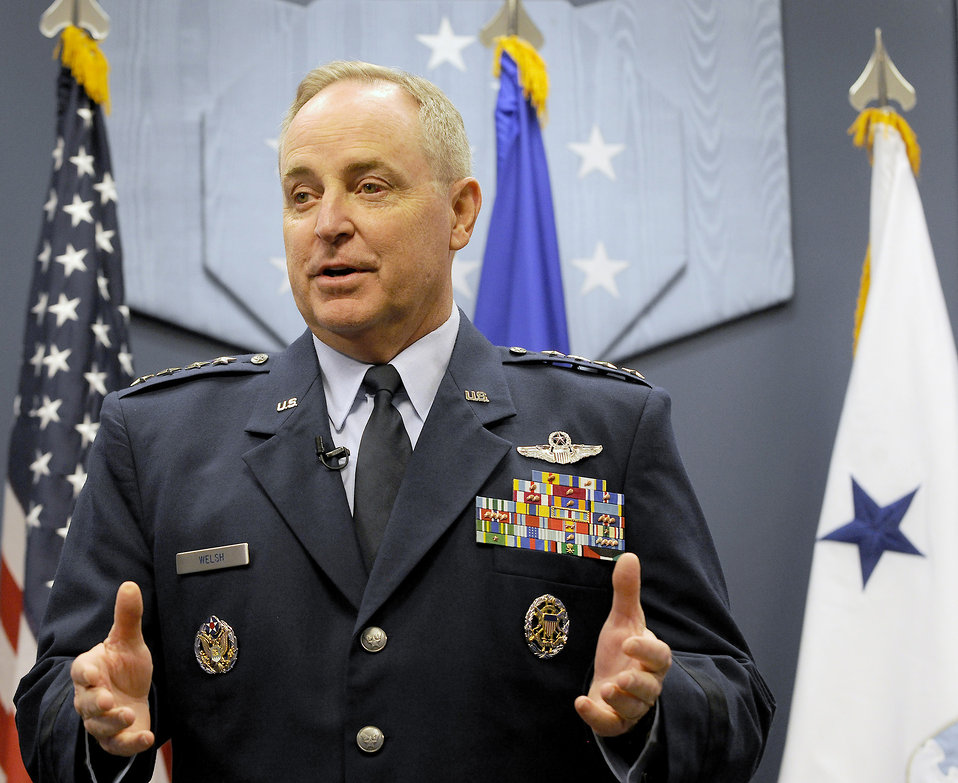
CSAF Team of Excellence awards

Air Force Chief of Staff Gen. Mark A. Welsh III congratulates winning members honored during the Air Force Chief of Staff Team Excellence awards in a Pentagon ceremony on Nov. 27, 2012. The three teams which made the finals and recognized today were the Electronic Flight Bag Team from Headquarters, Air Mobility Command at Scott Air Force Base, Ill.; Air Force Research Laboratory's Radar Relocation Project Management Team, from the 213th Engineering Installation Squadron in Newburgh, N.Y.; and the B-2 Window Change Continuous Process Improvement Team, from the 509th Aircraft Maintenance Group, from Whiteman Air Force Base, Mo.